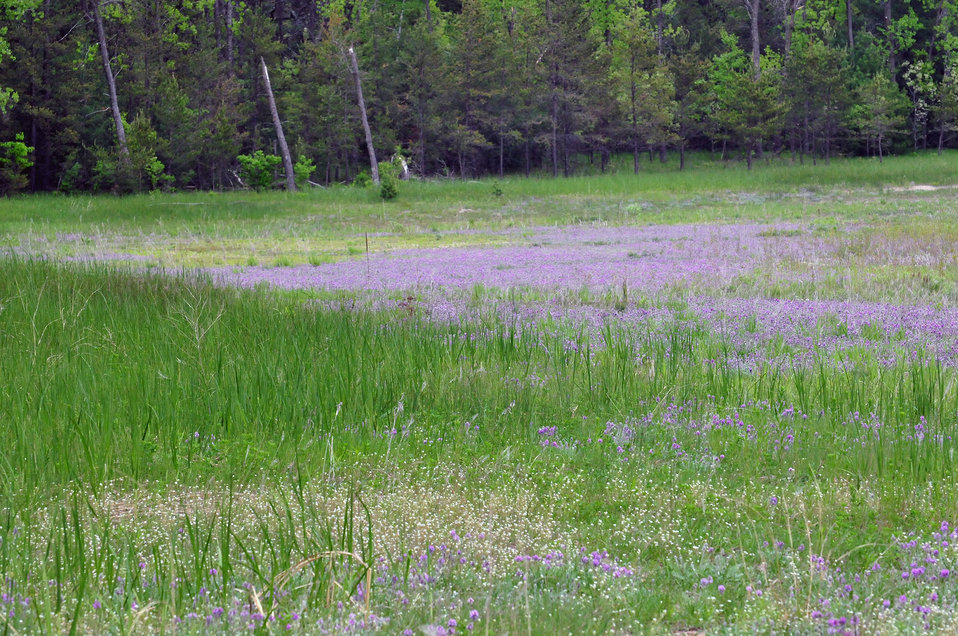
Fassett's locoweed on lake shoreline.

Fassett's locoweed, a federally threatened plant, is found on the shorelines of lakes with fluctuating water levels in Wisconsin. Photo by USFWS; Joel Trick